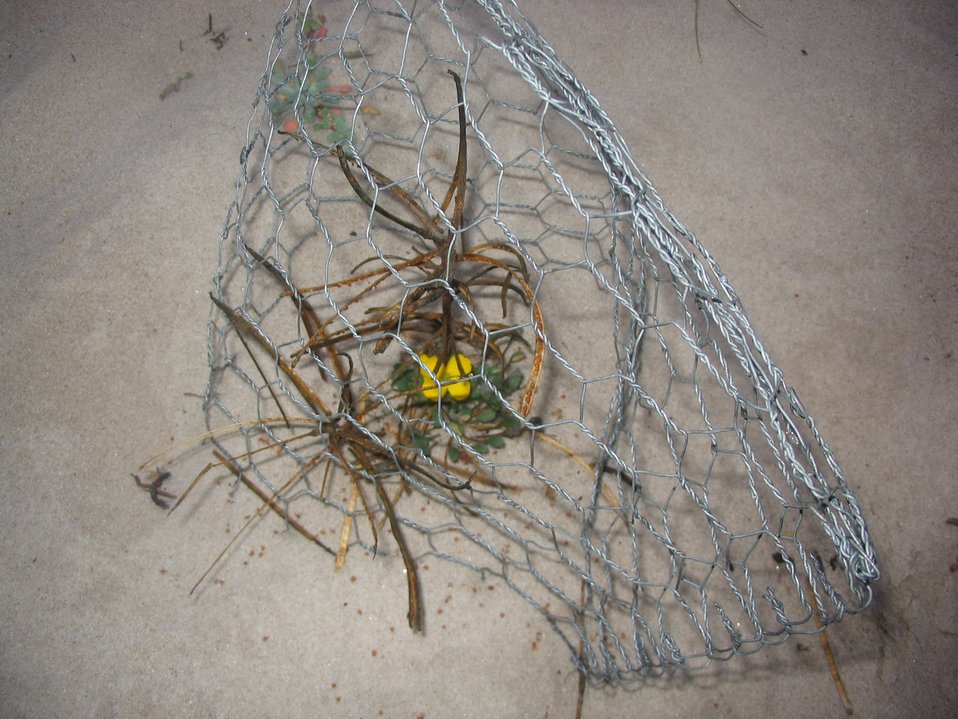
Menzies wallflower protected by wire cage. This is an endangered species.